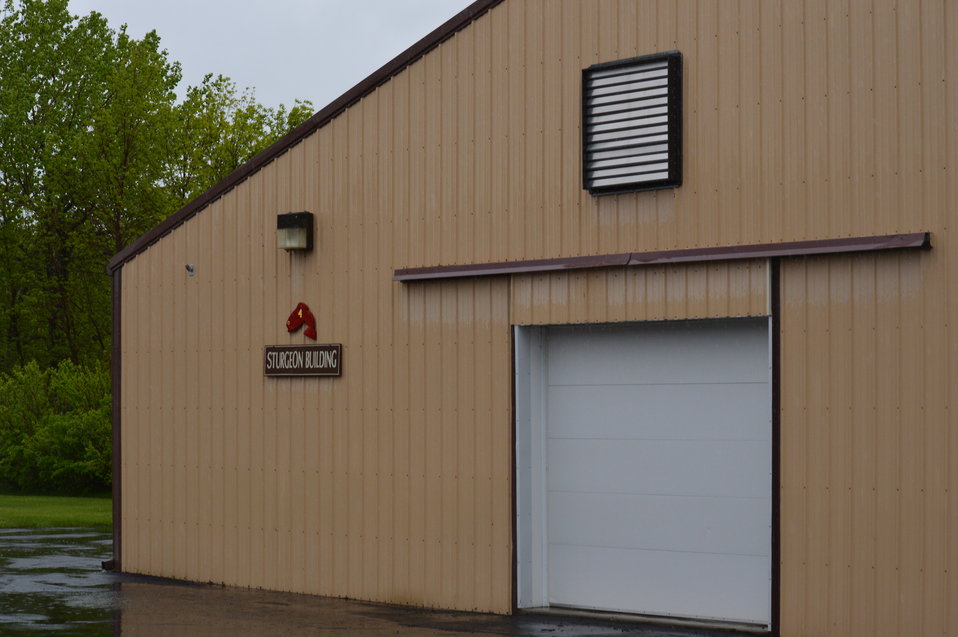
Sturgeon Building

Garrison Dam National Fish Hatchery in North Dakota.